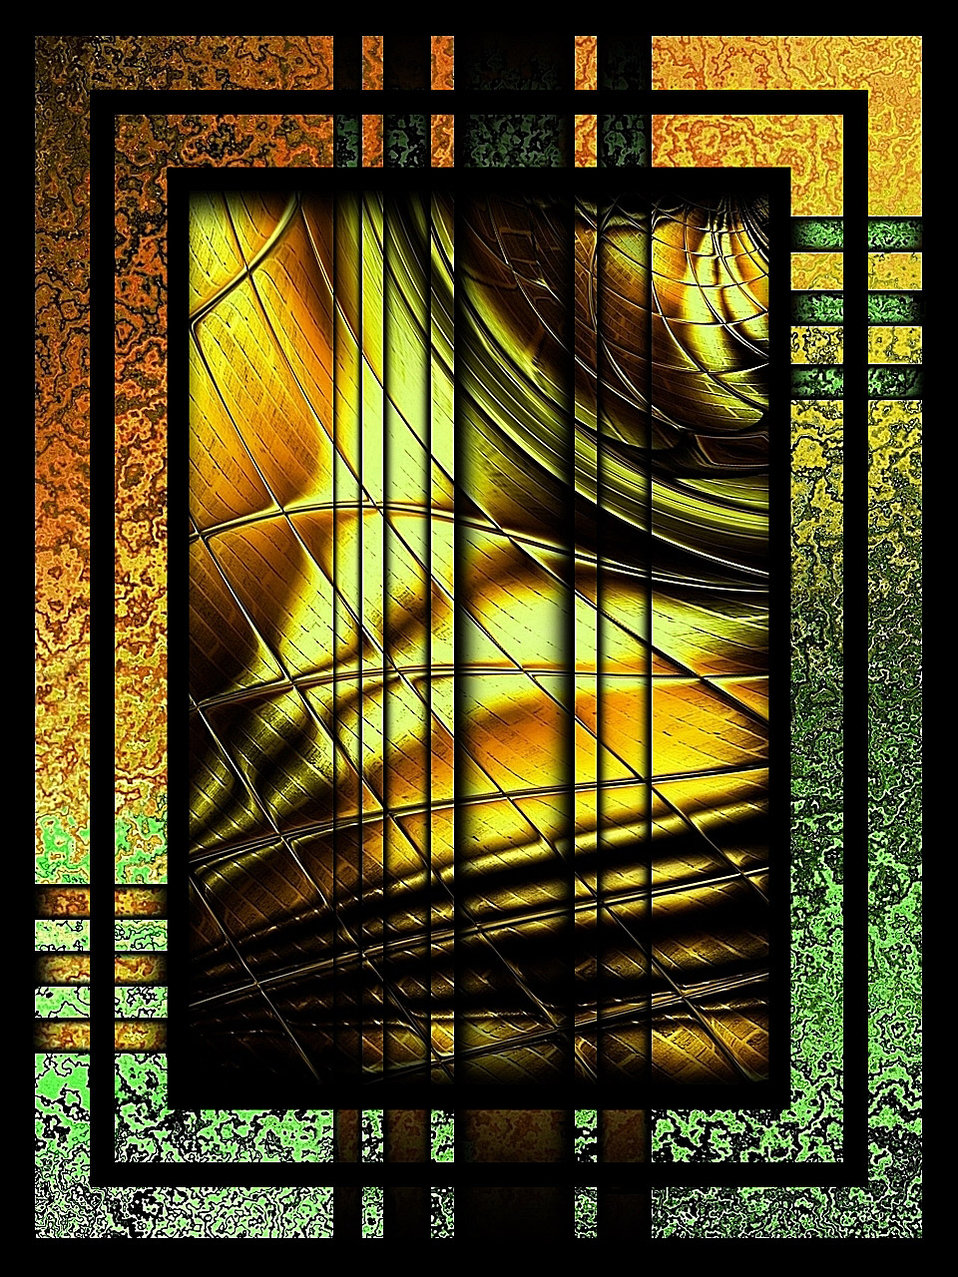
Lines in honey gold.